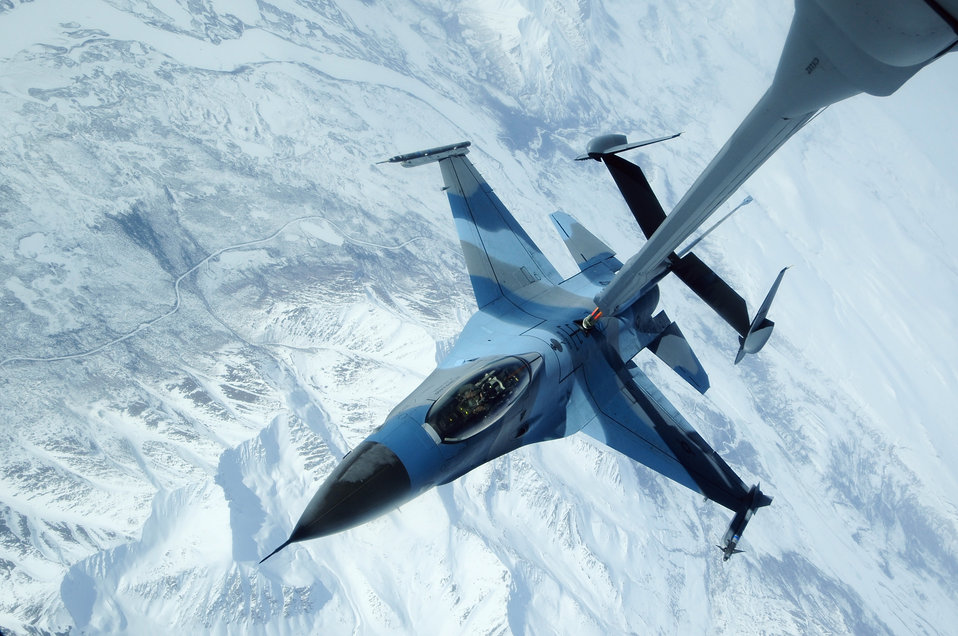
KC-10s keep Red Flag-Alaska aircraft fueled to fight

An F-16 Fighting Falcon and an aggressor sits in contact position at 27,000 feet while a KC-10 Extender off-loads fuel during Red Flag-Alaska 09-2 April 22 over Alaska. The F-16 is assigned to the 18th Aggressor Squadron from Eielson Air Force Base, Alaska.